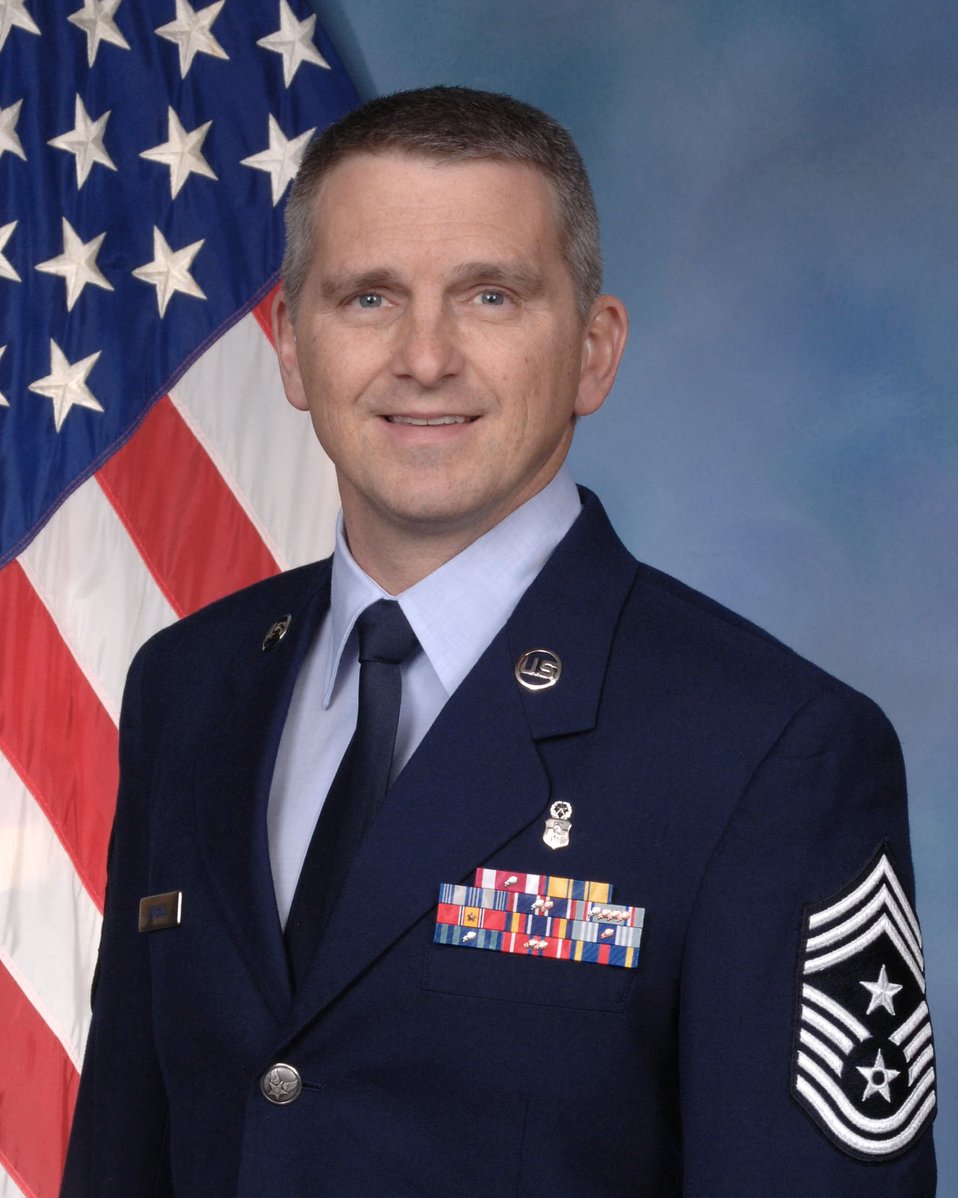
AF chief honored with Army’s prestigious medical Order

Chief Master Sgt. Kevin Lambing was inducted into the Army’s esteemed Order of the Military Medical Merit during a ceremony at Fort Sam Houston, Texas, April 20. Lambing was the command chief of the Medical Education and Training Campus at Fort Sam Houston. He is slated to become the chief of the Air Force Medical Enlisted Force in the Office of the Surgeon General.